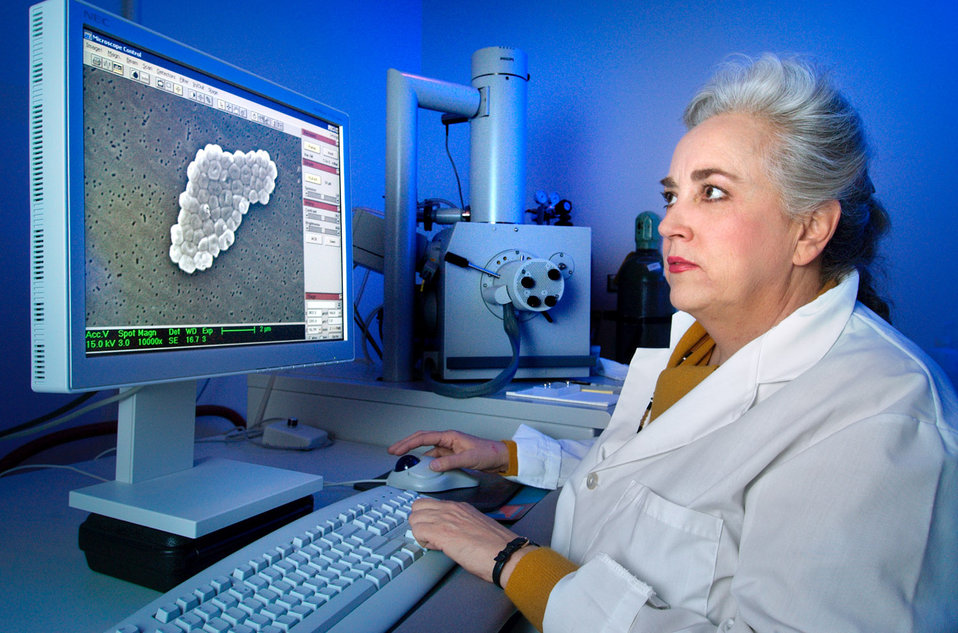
Janice Haney Carr, a CDC microbiologist and electron microscopist, is scanning a specimen of Acinetobacter baumannii bacteria.